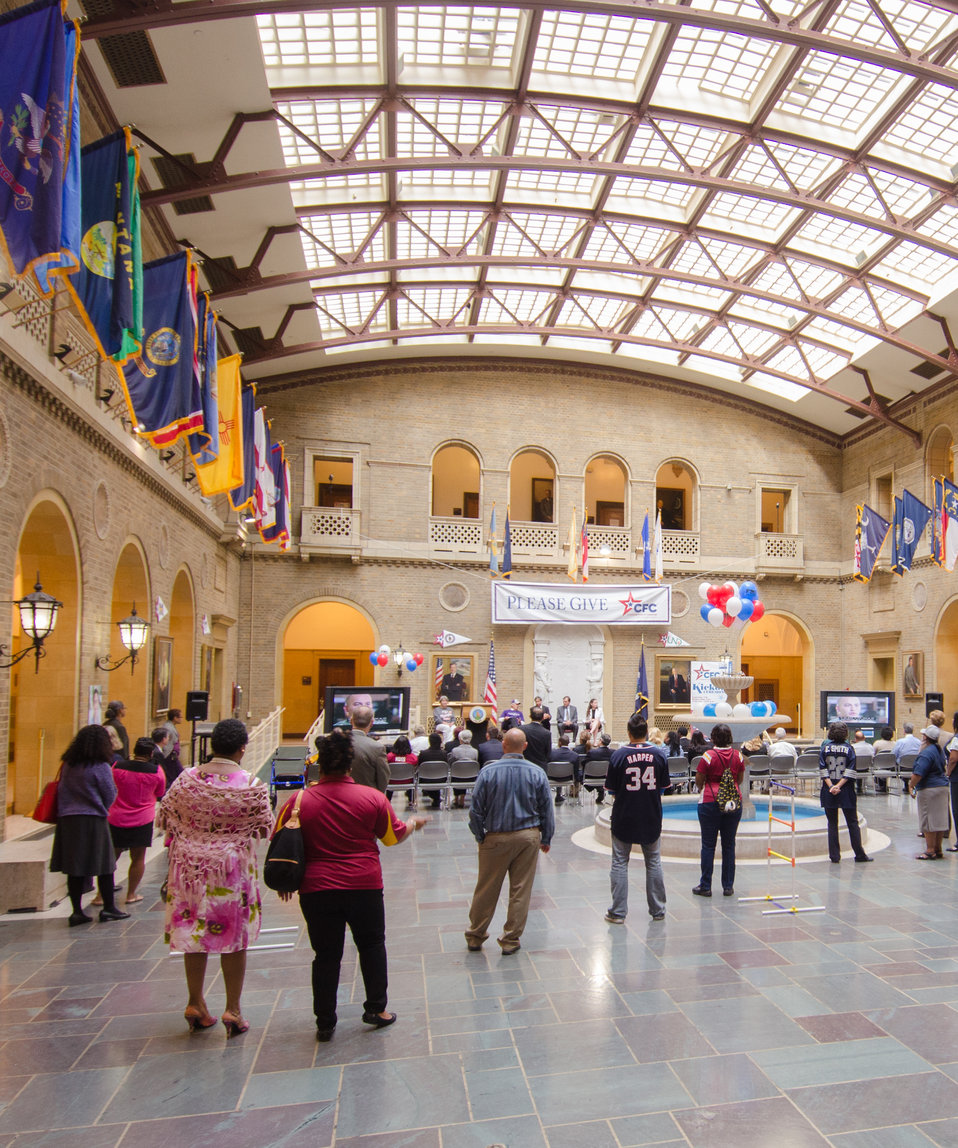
Guests view the 2013 Combined Federal Campaign video themed “Make it Possible!” is viewed during the opening ceremony and fund raising event on Tuesday, Sept 17, 2013 in the Whitten Building, U.S. Department of Agriculture (USDA), Washington, D.C. Employees took personal time to attend and participate in fund raising activities that generated donations and donation registrations that will help support charities. The Combined Federal Campaign (CFC) is the largest and most successful workplace charitable giving drive in the world. CFC is the only authorized charitable organization solicitation of Federal employees in their workplaces. CFC is structured to support and to promote philanthropy through a voluntary program that is cost-efficient and effective in providing all Federal employees the opportunity to impact the CFC charitable interest of their choosing. For more information about CFC, please see www.usda.gov/wps/portal/usda/usdahome?navid=USDA CFC USDA Photo by Lance Cheung.